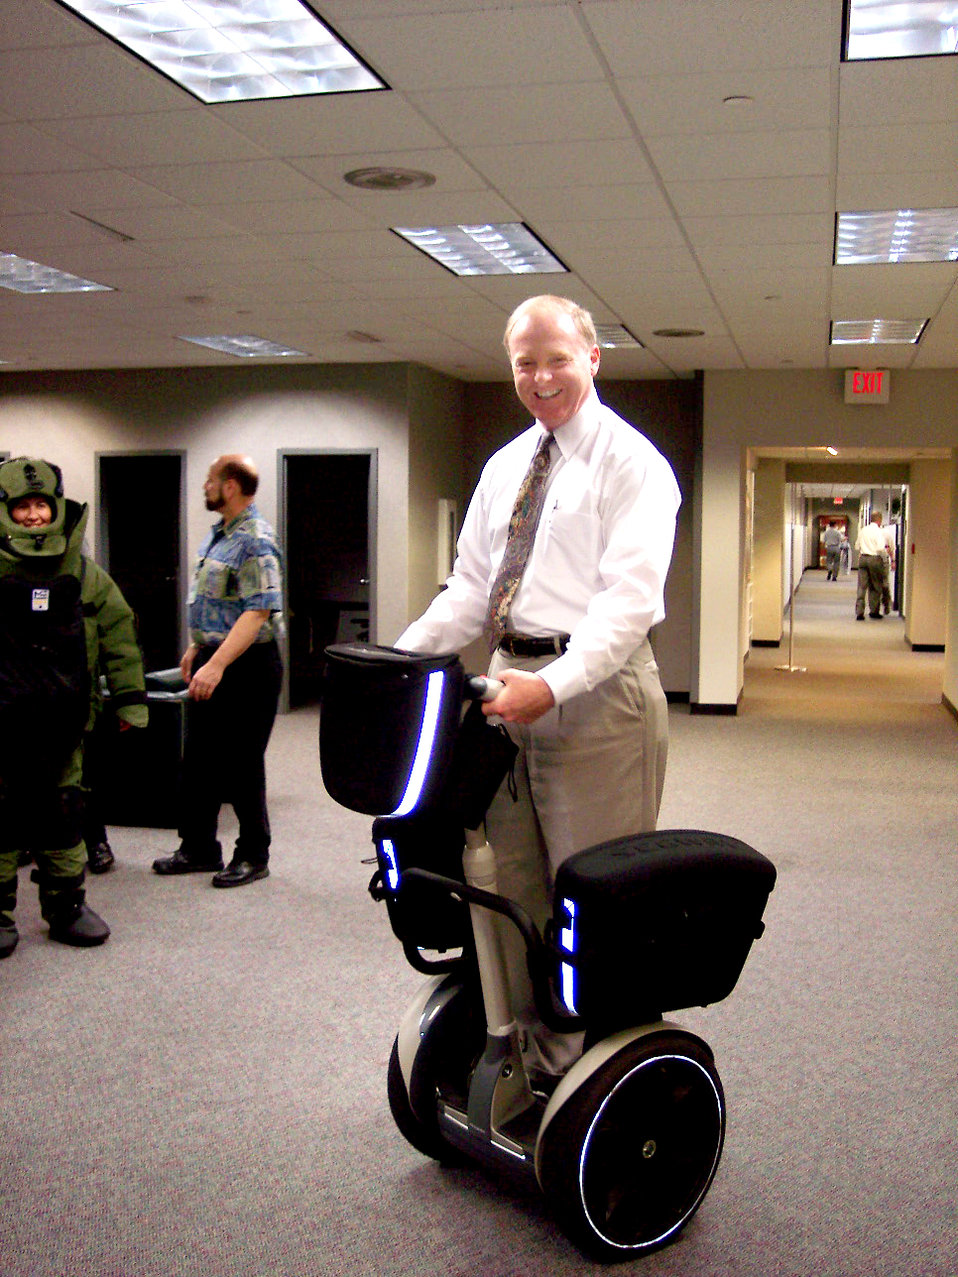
Civilian director accepted to Harvard

TYNDALL AIR FORCE BASE, Fla. -- Brian Lally rides a Segway used by explosive ordnance disposal teams. He was recently selected to attend Harvard University's John F. Kennedy School of Government through an Air Force development program for senior civilian managers. He is the executive director of the Air Force Civil Engineer Support Agency here.